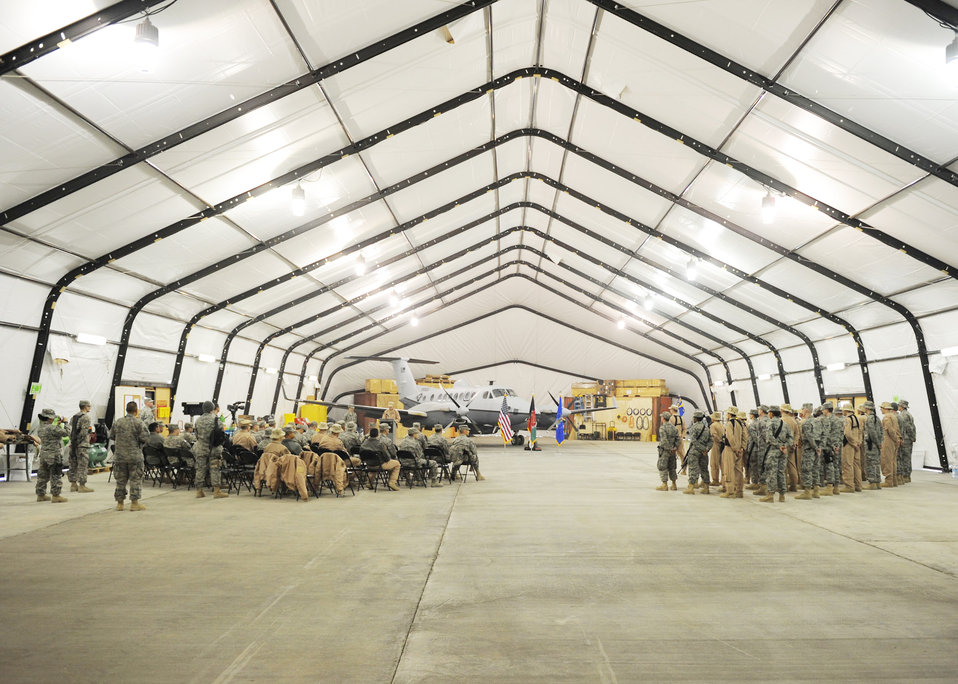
MC-12 arrival into the 455th Air Expeditionary Wing

Lt. Col. Douglas Lee gives a speech during an assumption of command ceremony Dec. 27, 2009, at Bagram Airfield, Afghanistan. The MC-12s primary mission is to provide intelligence, surveillance and reconnaissance, or ISR, support directly to ground forces. Colonel Lee is the commander of the 4th Expeditionary Reconnaissance Squadron.